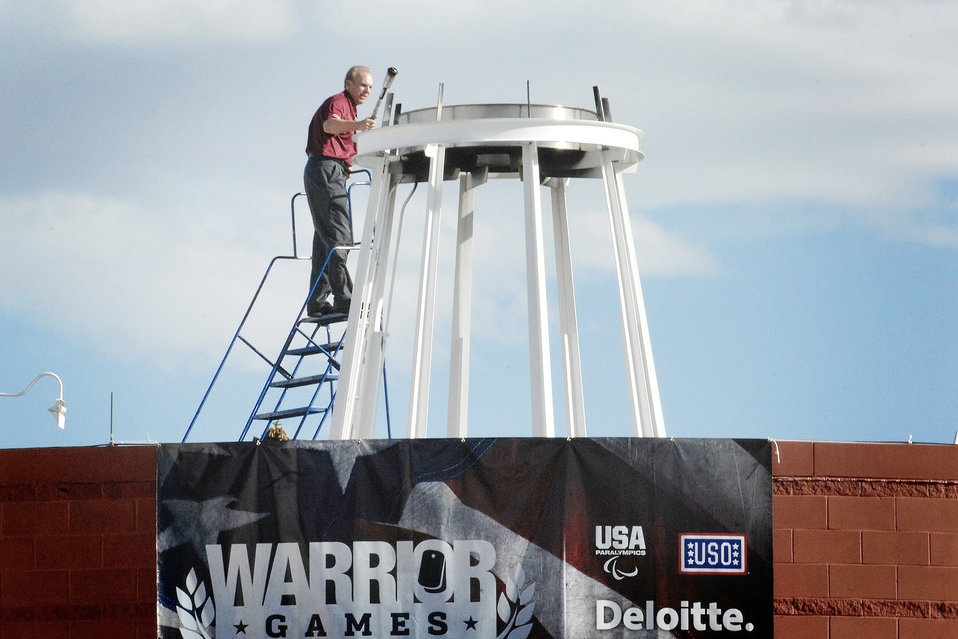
Olympic path marks troops' journeys to fulfilled dreams

Former Dallas Cowboys quarterback Roger Staubach lights the ceremonial torch at the inaugural Warrior Games May 10, 2010, at the Olympic Training Center in Colorado Springs, Colo. Mr. Staubach is a U.S. Naval Academy graduate and Vietnam veteran. Athletes from each of the services will compete in archery, cycling, basketball, shooting, swimming, track and field and volleyball during the week-long games.